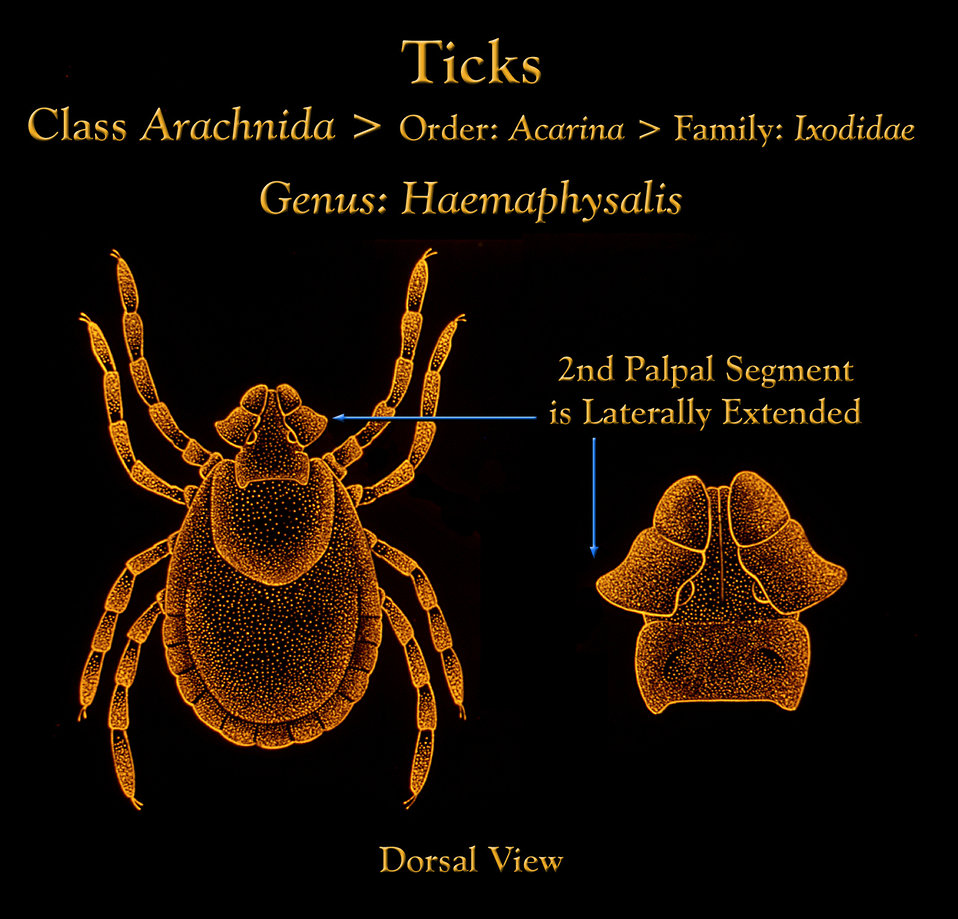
This drawing depicts the mouthparts displayed by members of the hard ticks in the genus Haemaphysalis.